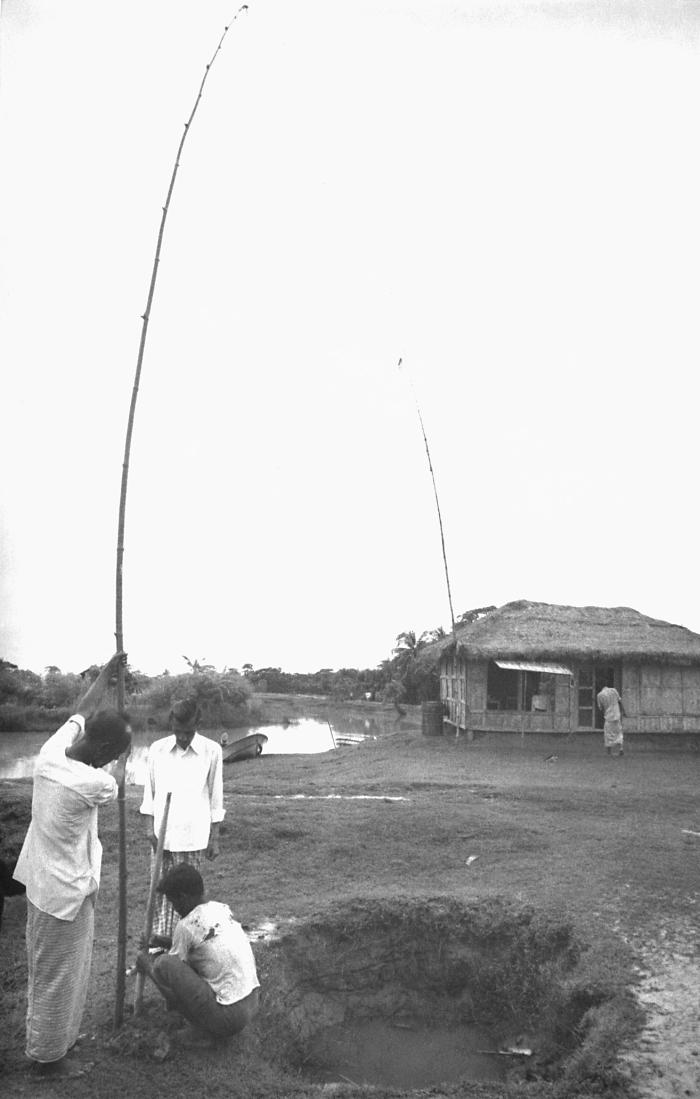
These men were assembling a radio antenna in order to establish lines of communication between villages. This was extremely important in order to notify other sites of the possibility that known smallpox cases were on the way to other areas. The smallpox office for the site pictured here is seen in the background. This image was part of a series provided by Dr. Stan Foster, and captured by Pierre Claquin, M.D., B.A.C., who at the time was a member of the World Health Organization's Smallpox Eradication Program. It was part of a series photographed by former E.I.S. officer, Stanley O. Foster M.D., M.P.H., and was one of a series entitled 'The Story of One Smallpox Jeep', which depicted the travails faced by the jeep, and its occupants of public health practitioners, as they road through the Bangladesh countryside in an attempt to eradicate smallpox from the country.